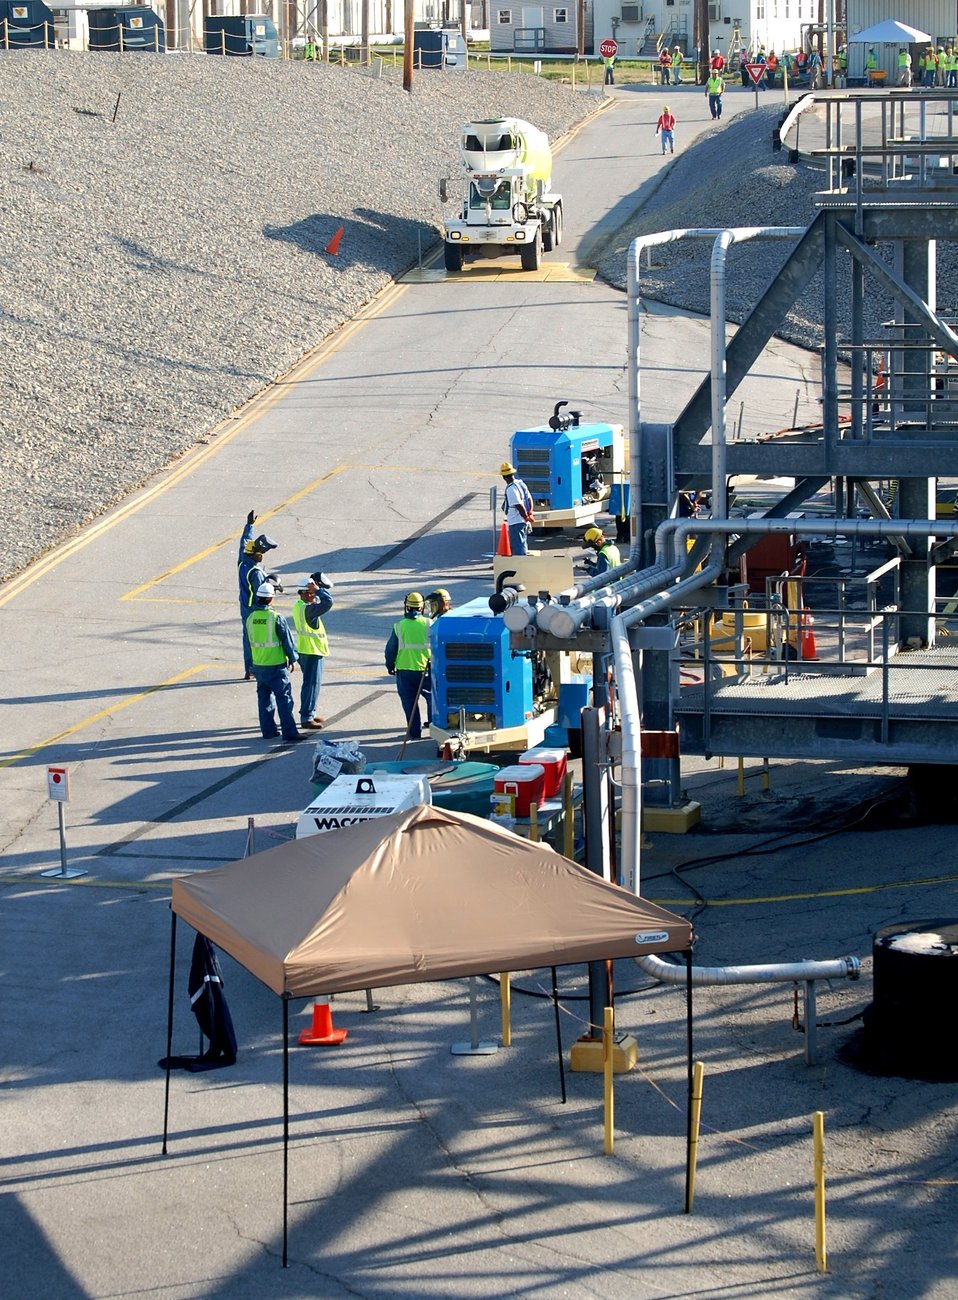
Risk reduction at SRS

Tanks 18 and 19 will be operationally closed at the Savannah River Site (SRS), located near Aiken, S.C. The start of grouting on April 2, 2012, culminates 32 years of waste removal and cleaning operations in the 1.3 million-gallon tanks and begins a process that will result in the first SRS waste tanks being closed since the first two were closed in 1997. Pictured here is the first cement truck that arrived at SRS on the morning of April 2 loaded with a specially formulated grout that will be pumped into a hopper and through lines to Tank 19, which will be filled with grout this summer along with Tank 18. The tanks become the first two hazardous waste tanks to be operationally closed since the DOE's first tanks were closed in 1997, also at SRS.